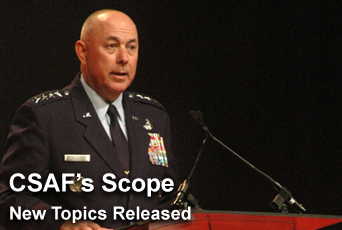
CSAF's Scope highlights force structure changes

The CSAF's Scope focuses on current topics the Air Force chief of staff feels are of special importance to today's Airmen, and among Gen. T. Michael Moseley's top issues in August is the Air Force's force structure changes and